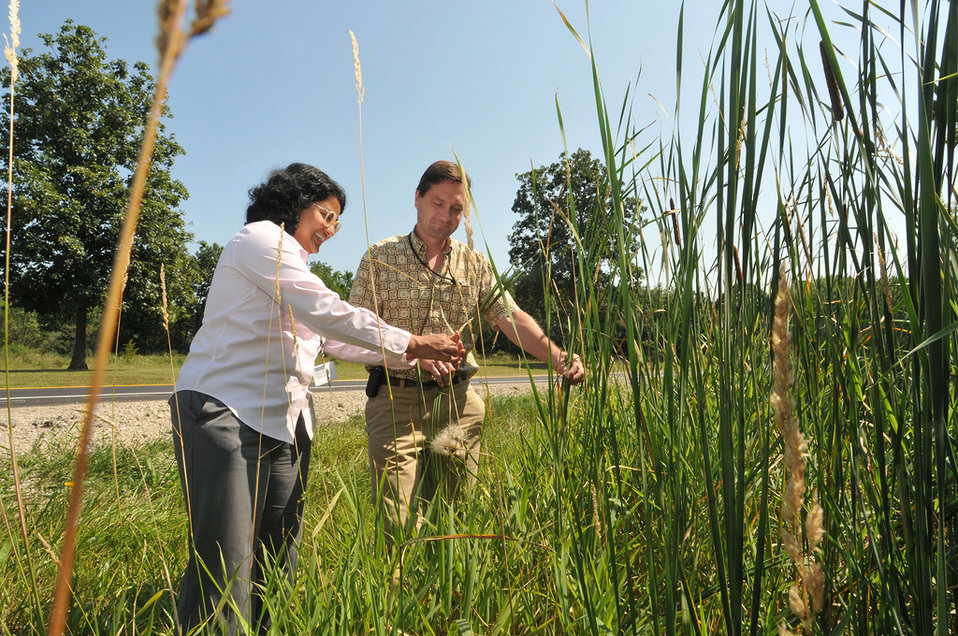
Gayathri Gopalkrishnan and Paul Benda, environmental scientists at Argonne National Laboratory, study potential biofuels crops.
Biofuels crops could be grown on roadsides and contaminated land to provide energy and clean up pollutants.